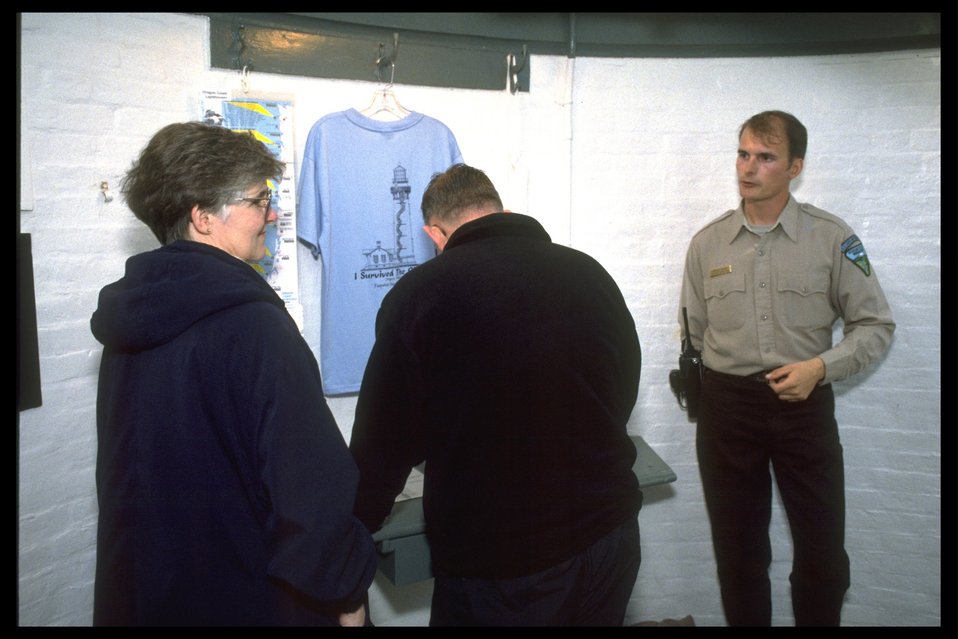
Inside of Yaquina Head Lighthouse.